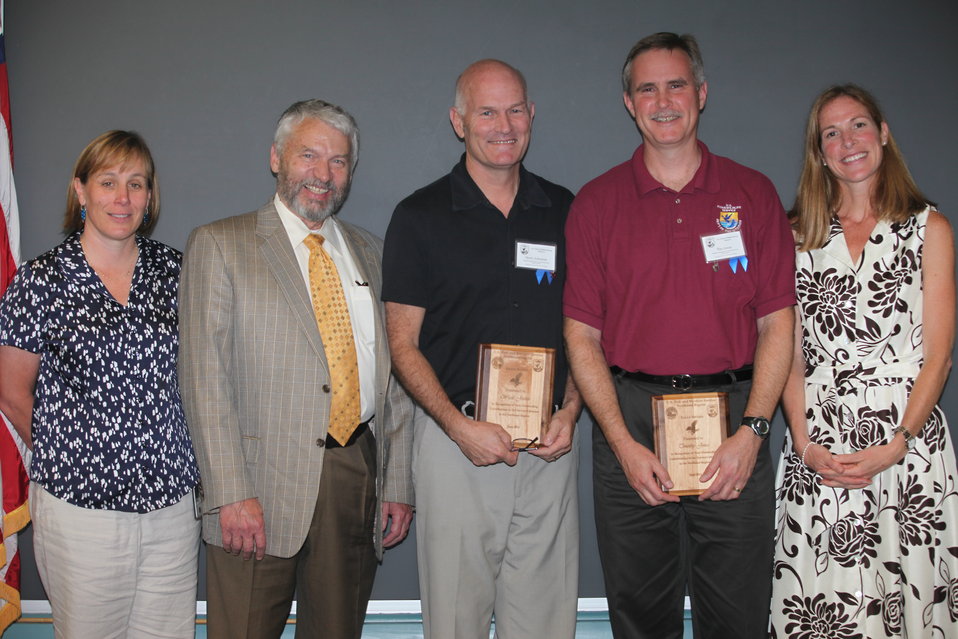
Scott Johnston and Tim Jones recieved the Eagle Award along with Melanie Steinkamp (not pictured) for work with Migratory Birds.
From left to right: Deputy Regional Director Deb Rocque, Deputy Director Rowan Gould, Scott Johnston, Tim Jones and Regional Director Wendi Weber